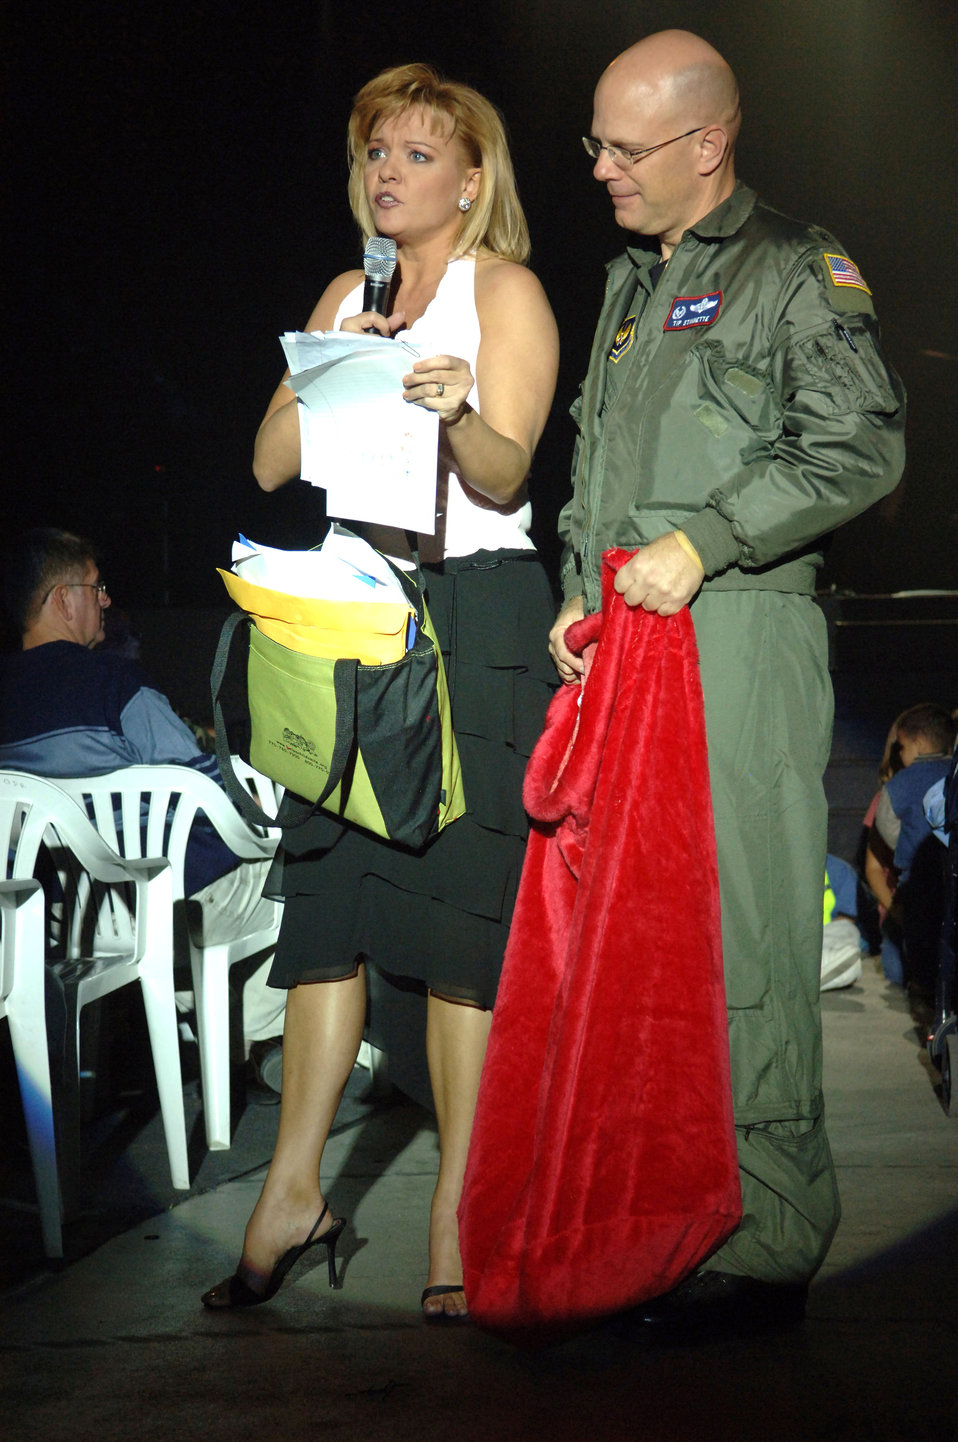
Performers bring holiday cheer to the 'Lik'

Mary Therese reads thank-you cards from students at an elementary school at Robins Air Force Base, Ga., to Col.